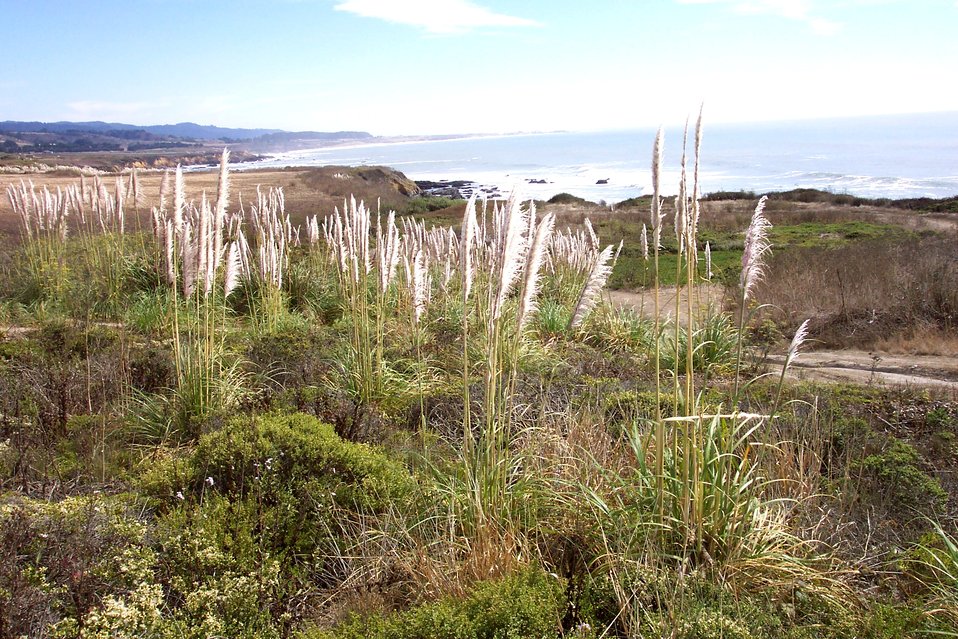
Pampas grass, Cortaderia selloana, brought to California as a decorative plant by horticulturist Joseph Sexton in Goleta, California, is now a major invasive species along the California coast.